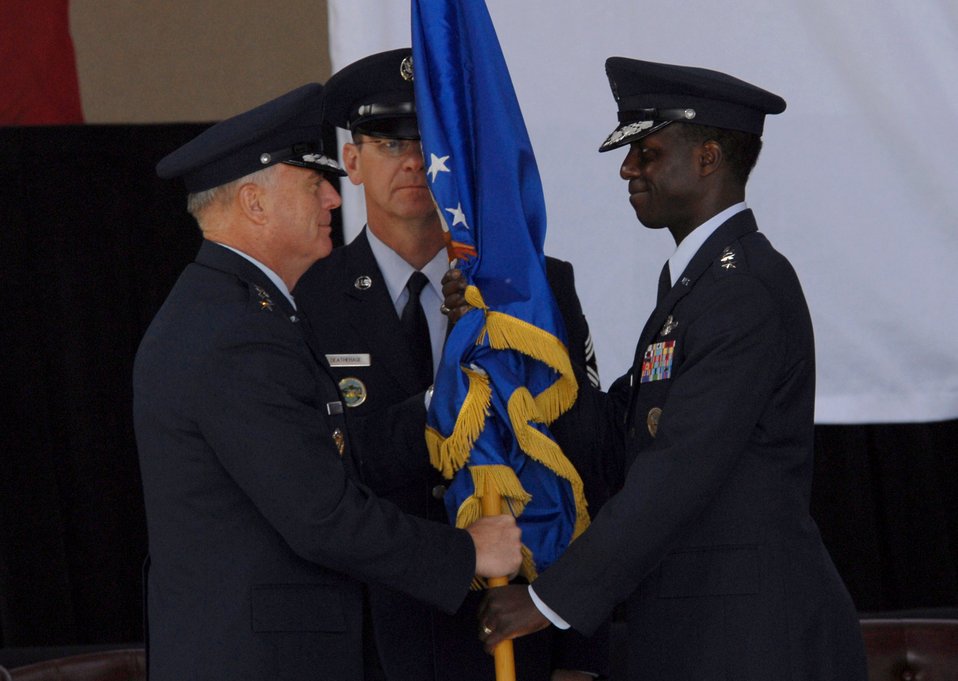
U.S. Forces Japan, 5th Air Force welcome new commander

Lt. Gen. Edward A. Rice Jr. accepts the U.S. Forces Japan unit colors from Gen. Carrol H.